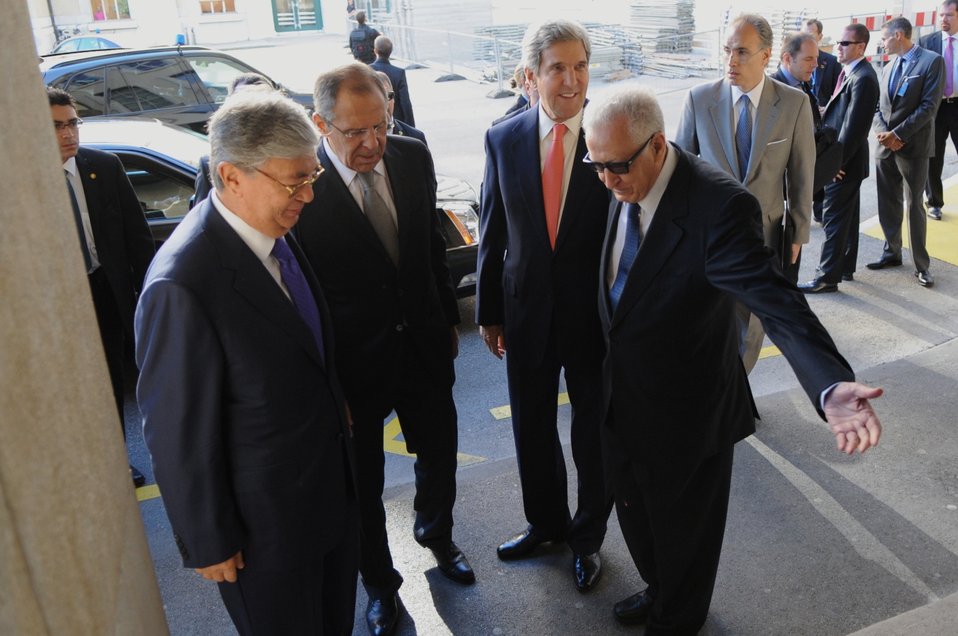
UN Special Envoy Brahimi leads Secretary Kerry and Foreign Minister Lavrov into UN Headquarters in Geneva

United Nations Special Envoy to Syria Lakhdar Brahimi leads U.S. Secretary of State John Kerry, Russian Foreign Minister Sergey Lavrov, and United Nations Geneva Office Director-General Kassym-Jomart Tokayev into the United Nations headquarters for a discussion focused on a political solution to Syria's civil war in Geneva, Switzerland, on September 13, 2013.